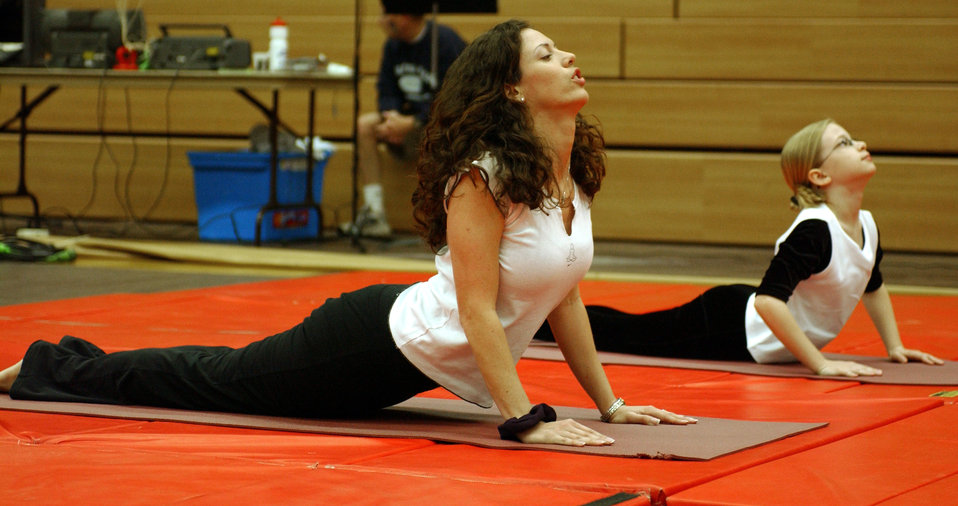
Yoga party

SPANGDAHLEM AIR BASE, Germany -- Rachel Sumja (left), a yoga instructor, and Kaitlyn Miller perform a yoga demonstration during the